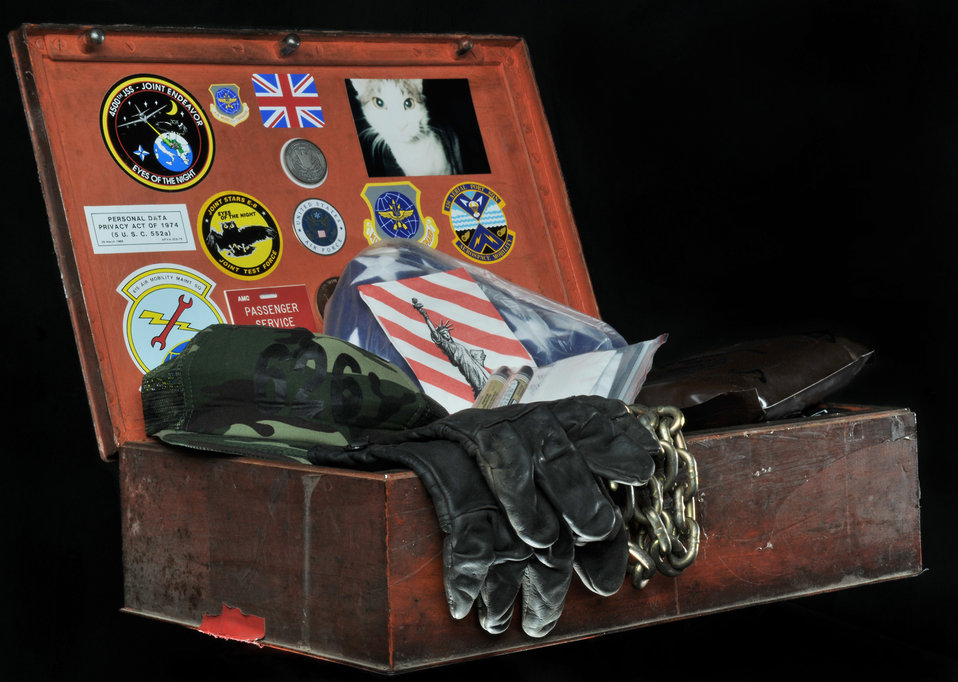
Portal to AF past found at Frankfurt Airport

A time capsule buried on what was Rhein-Main Air Base, Germany, by members of the 626th Air Mobility Support Squadron September 1996 is on display at Ramstein Air Base, Germany. The capsule was unearthed by German construction workers about 13 years after its entombment.